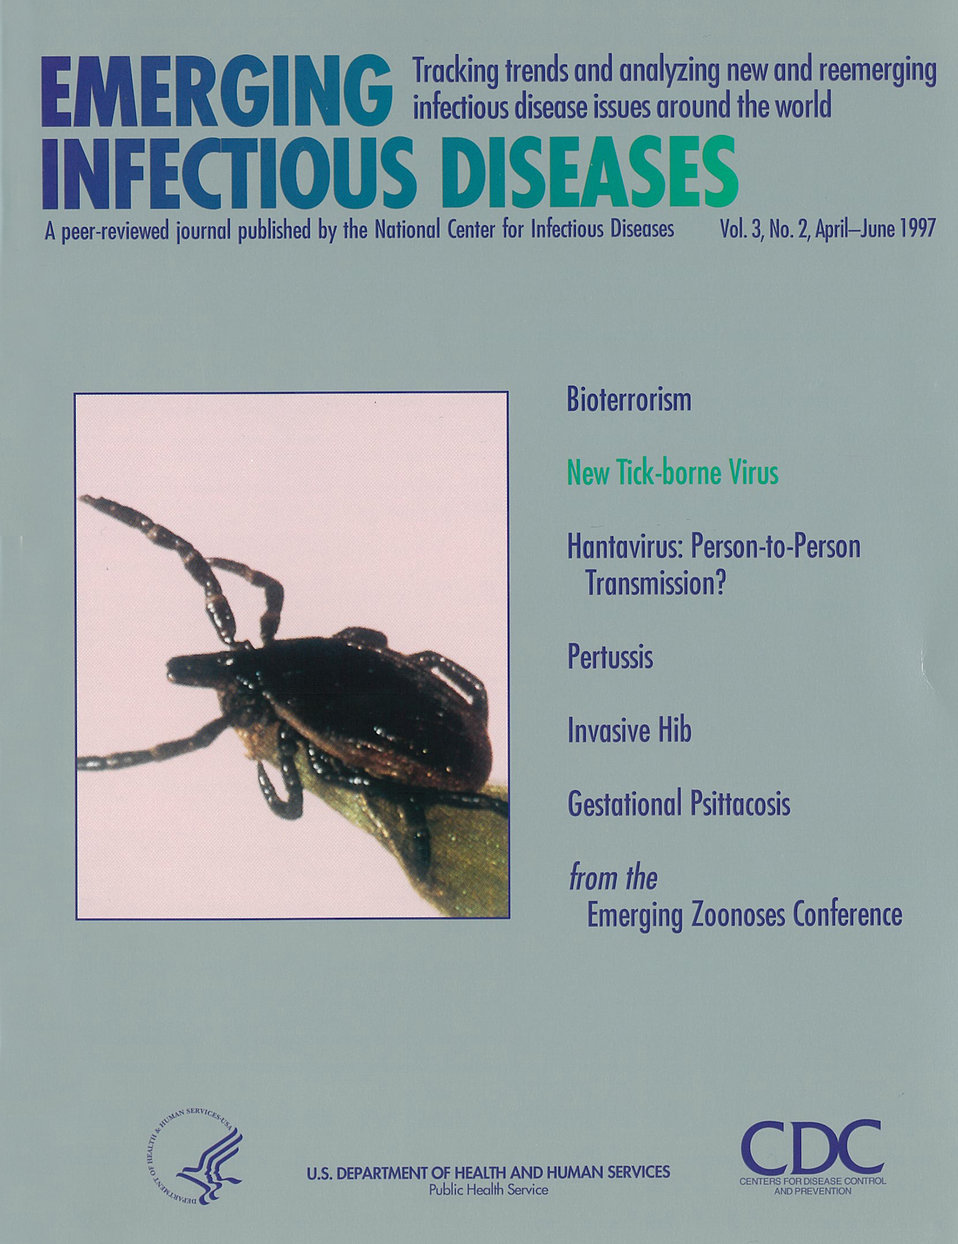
Emerging Infectious Diseases (EID) cover artwork for Volume 3, Number 2, April-June 1997 issue.